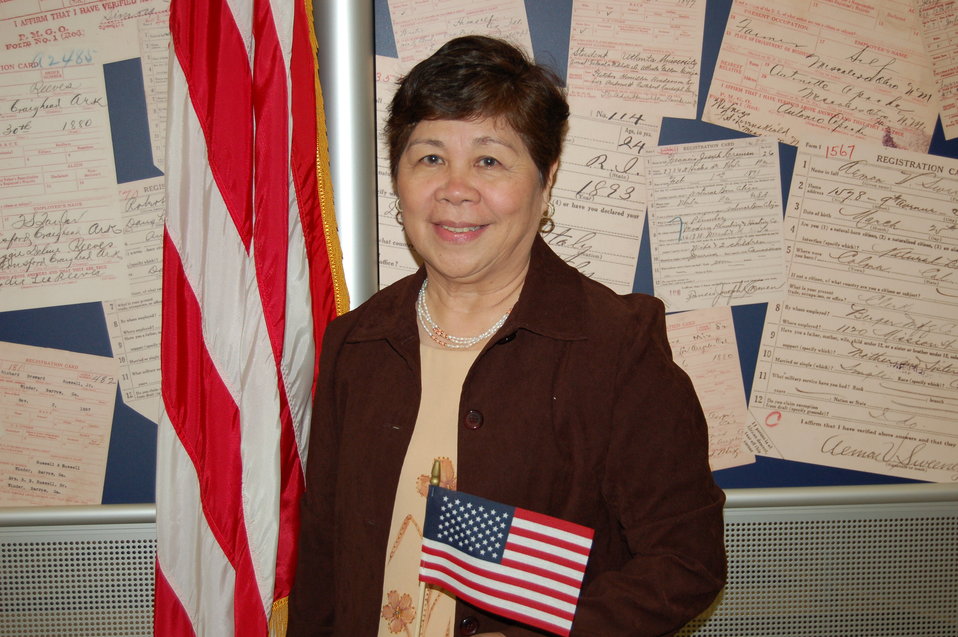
New Citizens